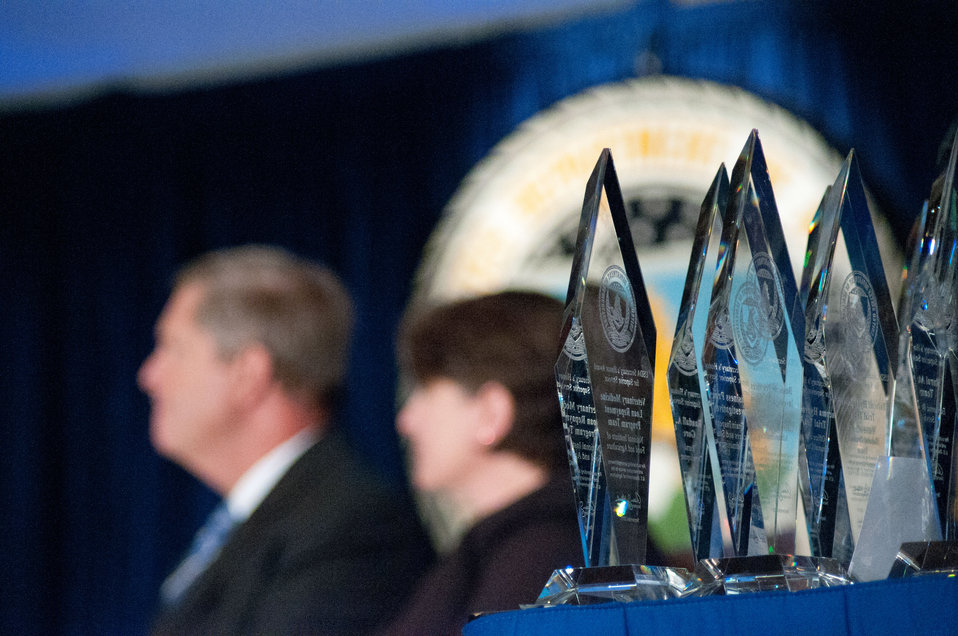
United States Department of Agriculture 63rd Secretary’s Annual Honor Awards ceremony held in the Thomas Jefferson Auditorium in Washington, D.C. on Wednesday, September 14, 2011.